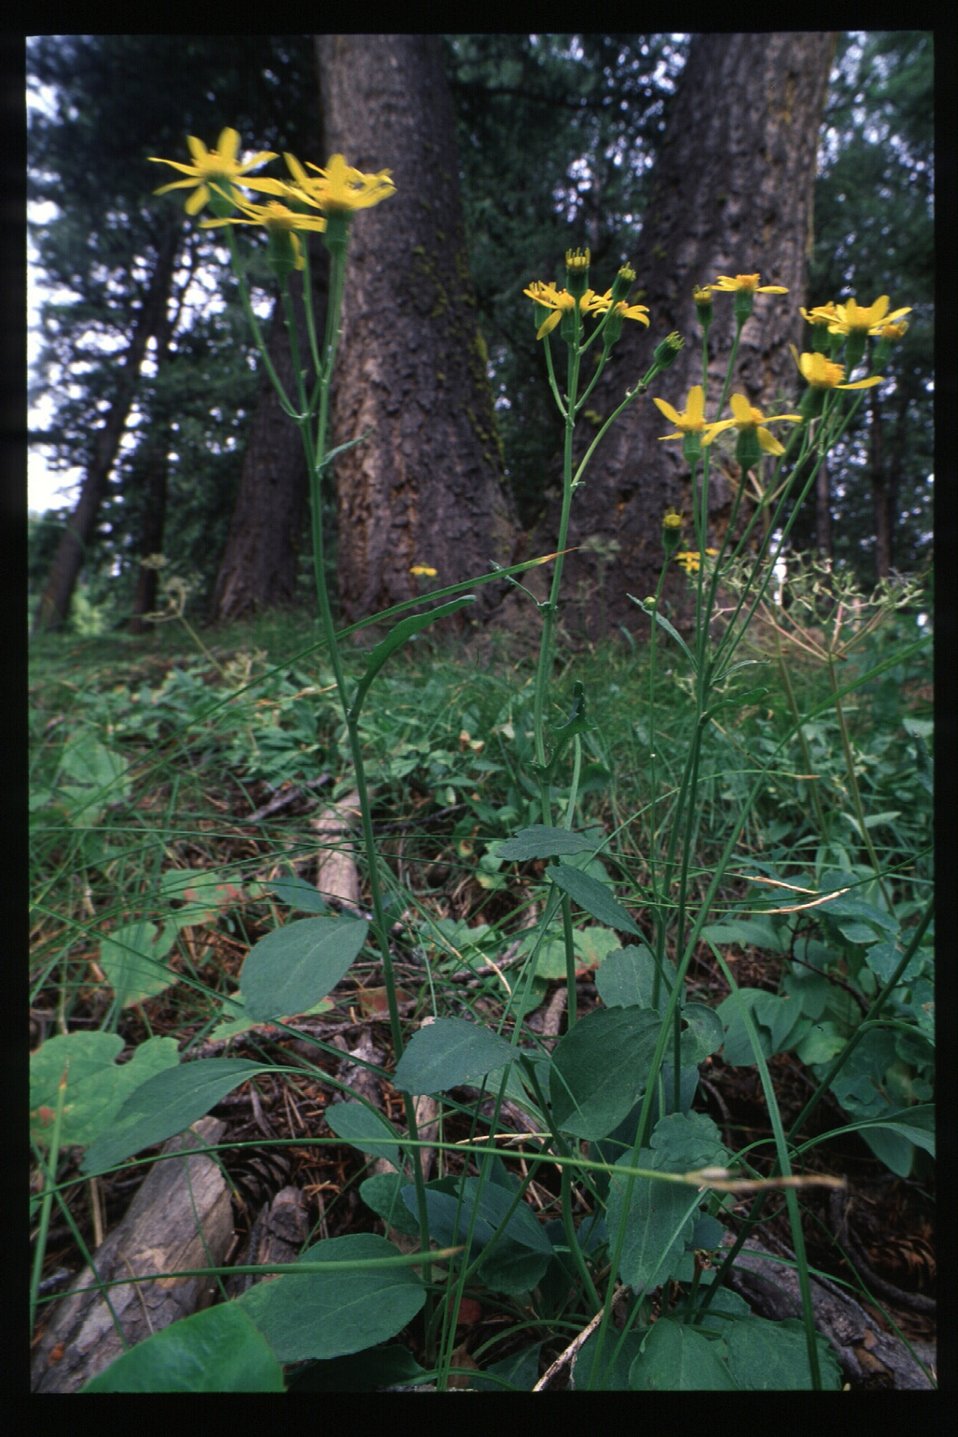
Recreation Scenic Biker Shoshone Field Office USRD Upper Snake River District Bald Mountain Trail Wildflowers